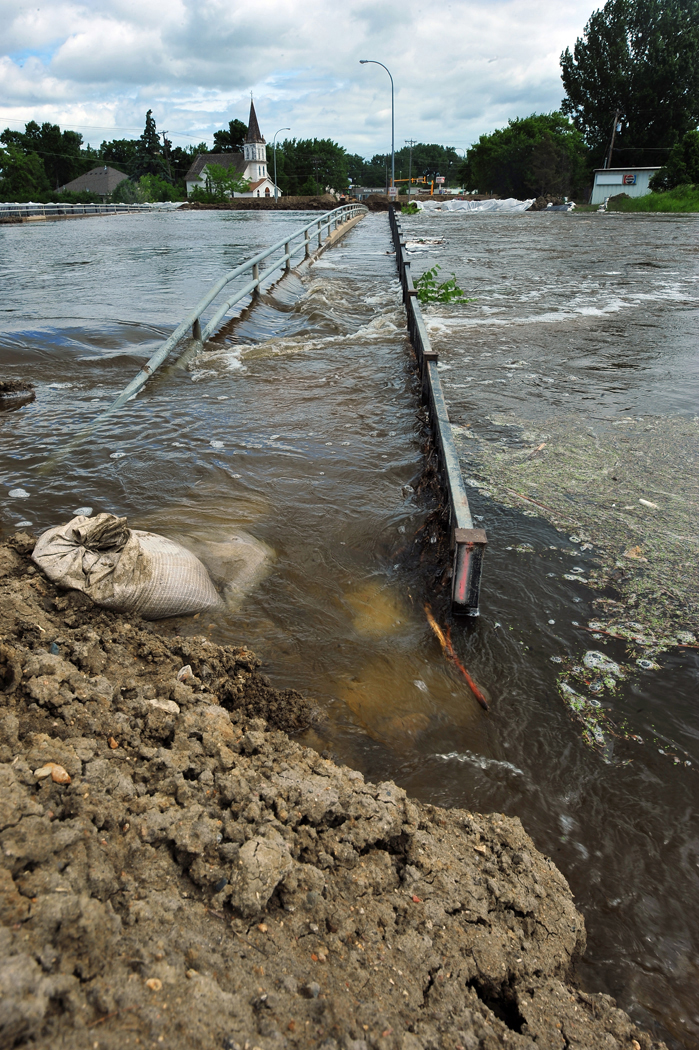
Minot Airmen fight flood

The Souris River in Minot N.D. breached its levee June 22, 2011, forcing more than 11,000 residents to evacuate. The flood also is affecting nearly 1,000 Airmen from nearby Minot Air Force Base.